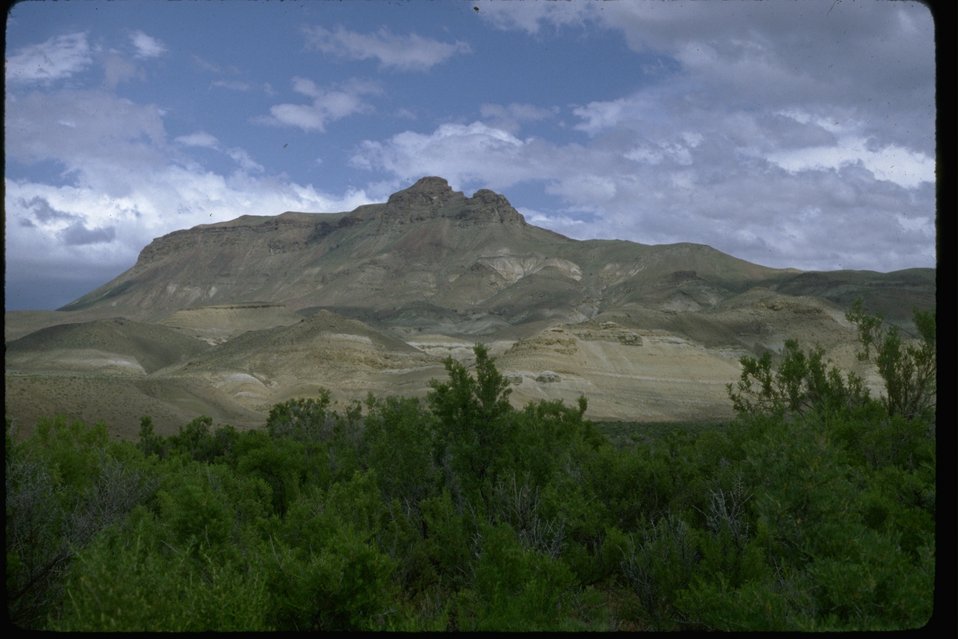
Red Butte in the Dry Creek Buttes Wilderness Study Area. OR 3-56